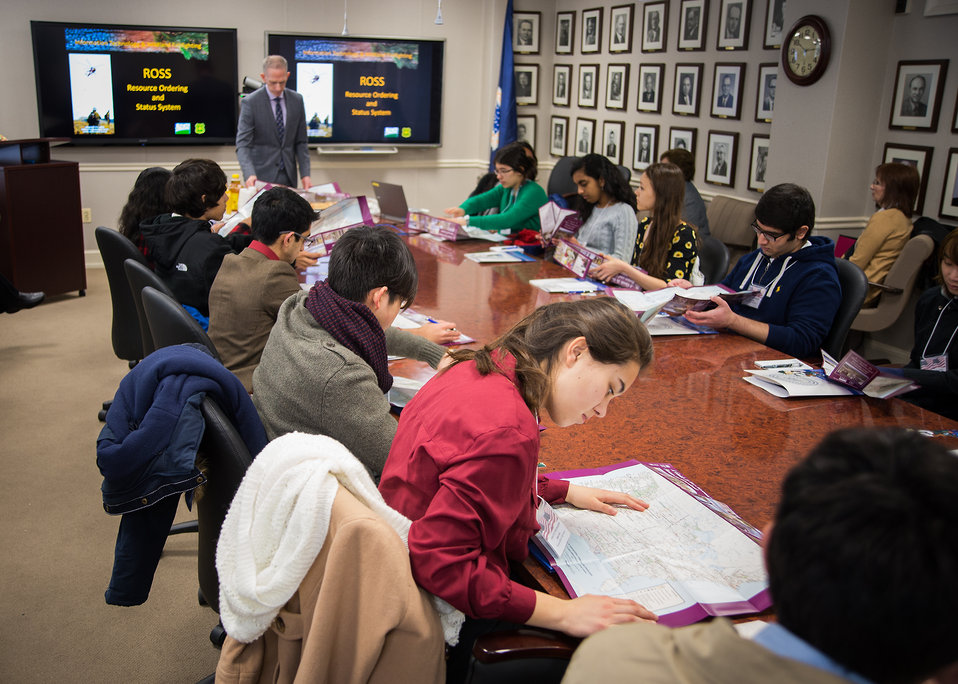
Shani Cave, a student from Thomas Jefferson High School of Science and Technology in Alexandria, VA. reviews, 'A Guide to Your National Forests and Grasslands' during the U.S. Department of Agriculture (USDA), Office of the Chief Information Officer (OCIO) IT Job Shadow Day, Tuesday, Mar. 25, 2014. The OCIO IT Job Shadow Day hosts students from local high schools in the Washington, D.C. area annually with IT professionals and agricultural specialists from a variety of mission areas at USDA.